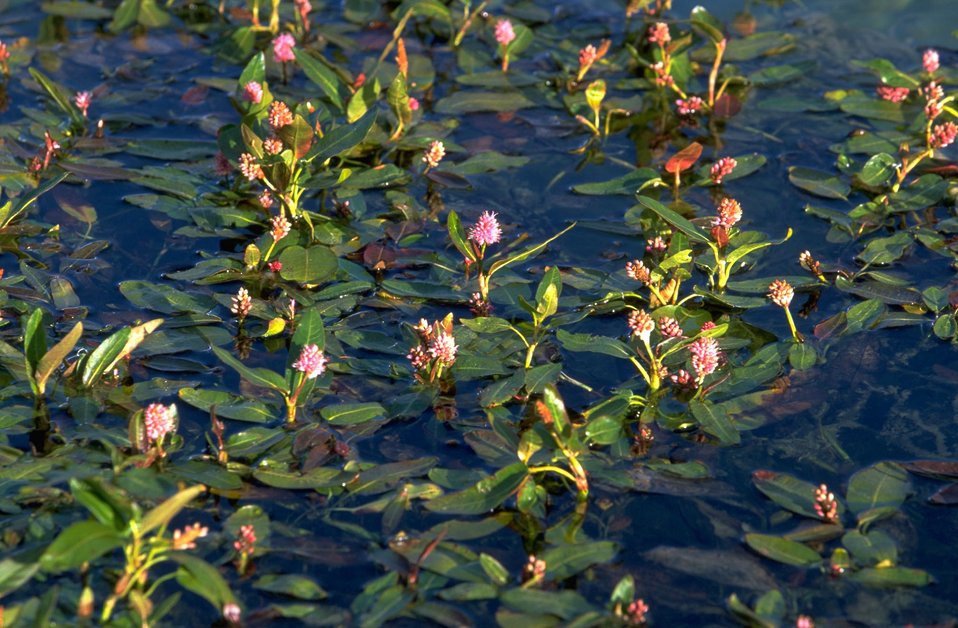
Blooming Lillies in Lake Axolotl